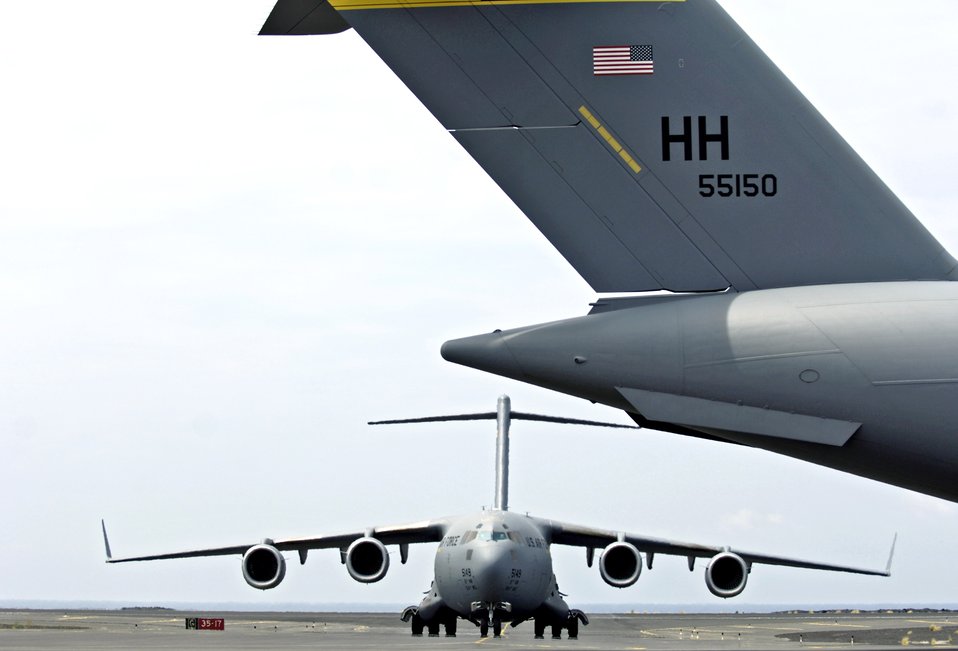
Air show to showcase C-17's capabilities

Two C-17 Globemaster III's taxi down the runway Sept. 27 at Kona International Airport in Hawaii. The C-17's are from the 535th Airlift Squadron based at Hickam Air Force Base, Hawaii.